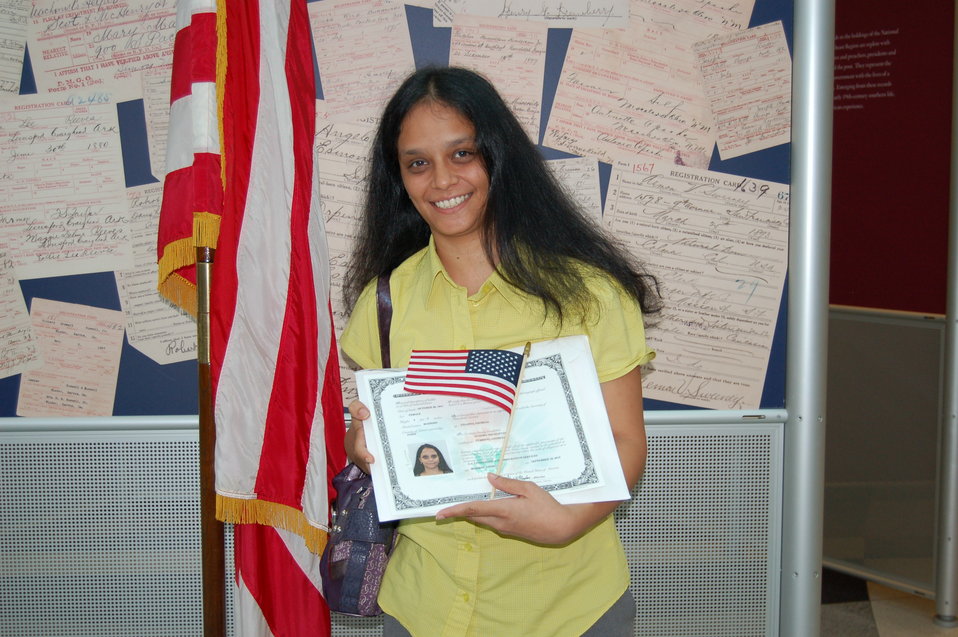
New Citizens